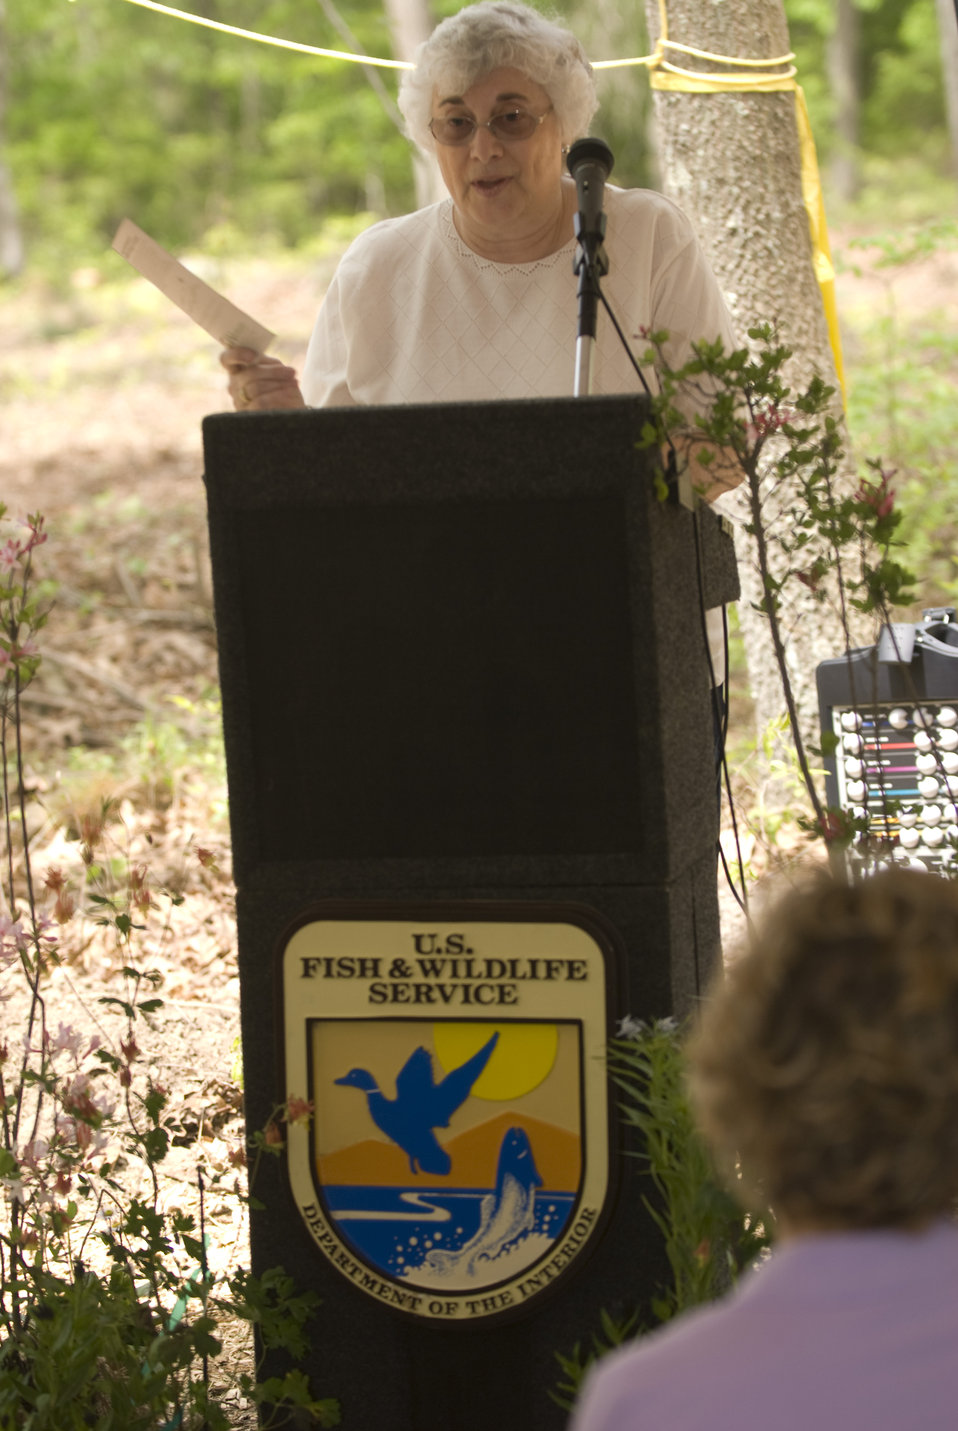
Friends of Wertheim President - Claire Goad